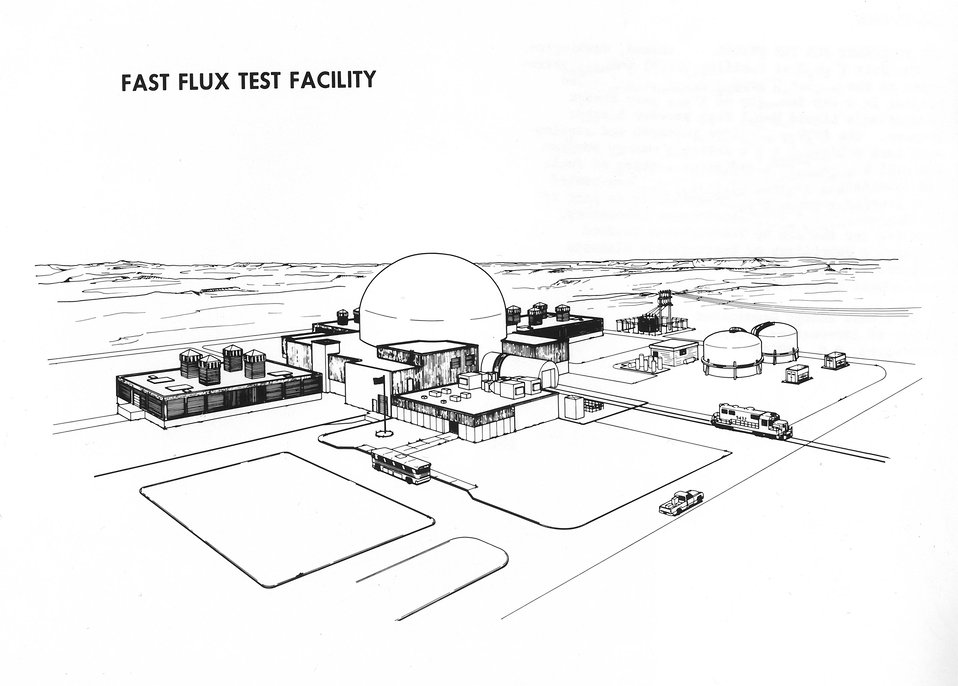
The Fast Flux Test Facility (FFTF), under construction, is a key facility of the Atomic Energy Commission's Liquid Metal Fast Breeder Reactor Program. c. 1970.